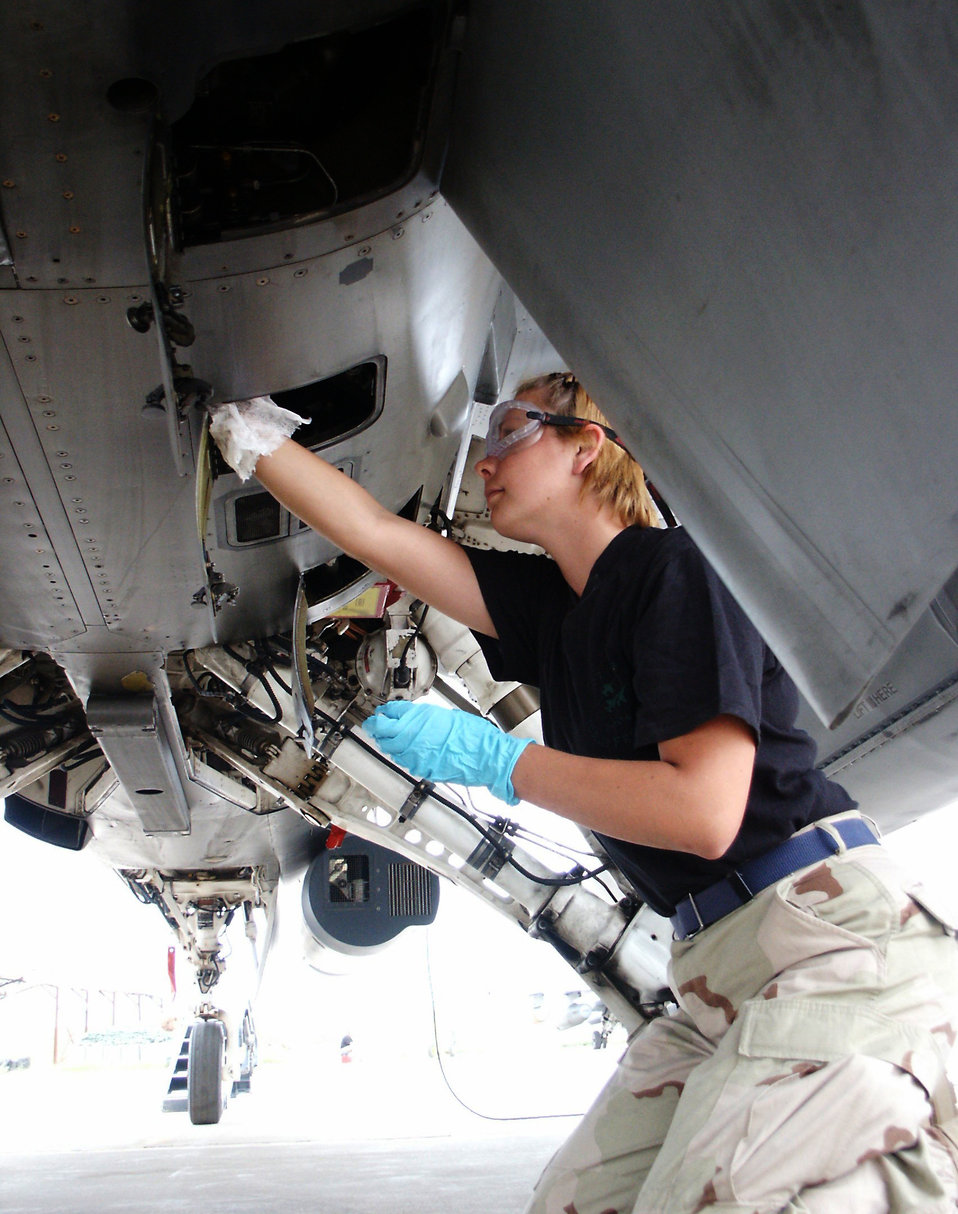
Guard in Iraq

KIRKUK AIR BASE, Iraq -- A crew chief with the Michigan Air National Guard's 107th Fighter Squadron conducts random maintenance on a F-16 Fighting Falcon here April 21.